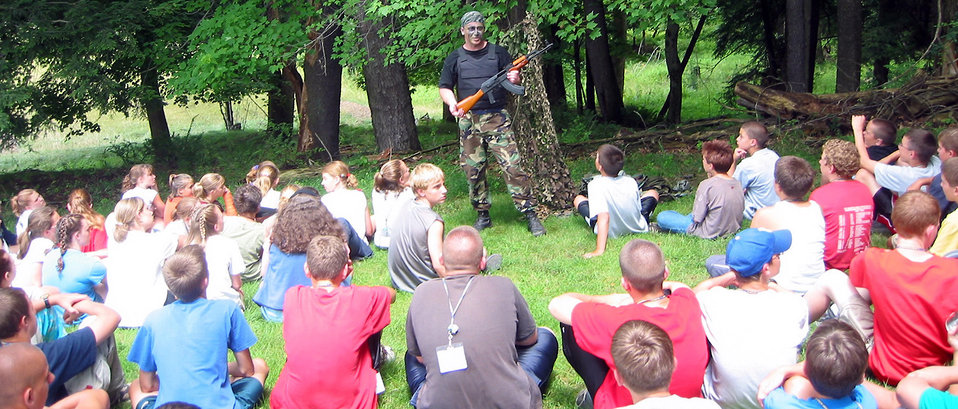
Show and tell

CLARION, Penn. -- Senior Airman Dan Magas demonstrates the finer points of an AK-47 during the Pennsylvania State Police's Camp Cadet program here. Magas went through the program at age 13, served as a counselor during his teenage years and has returned to serve as a drill instructor three times in his Air Force career. He is a security controller assigned to the 65th Security Forces Squadron at Lajes Field, Azores.